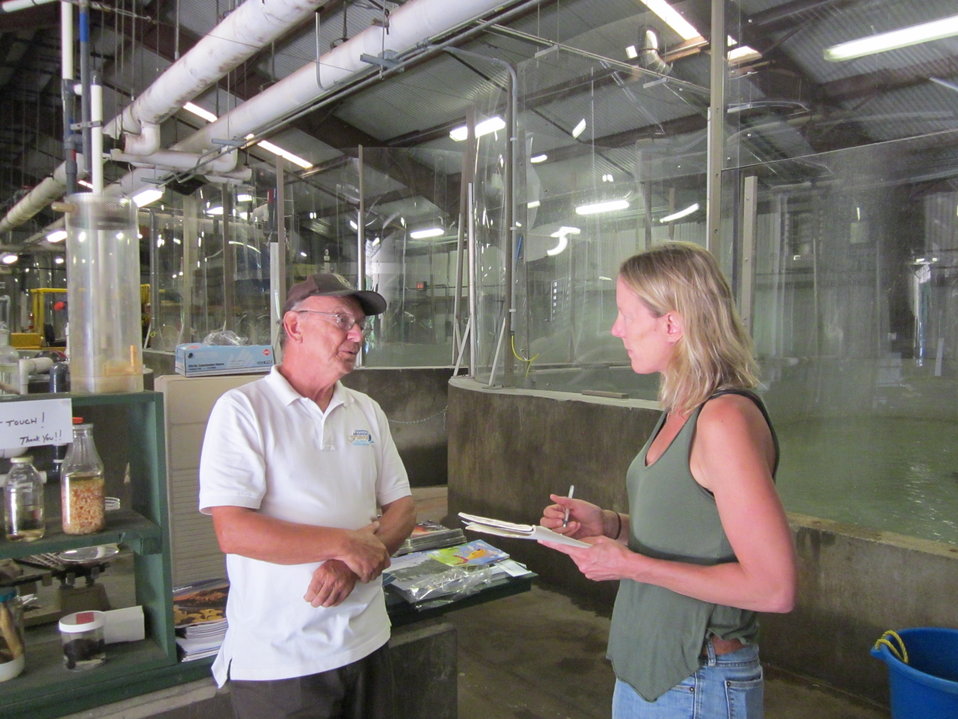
Hatchery manager interview

Sunderland, MA , July 24, 2012: Boston Globe reporter Beth Daley interviews Richard Cronin National Salmon Station Manager Micky Novak. Daley was on site to do a story about the announcement that the U.S. Fish and Wildlife Service would discontinue rearing Atlantic Salmon to restore the species to the Connecticut River.